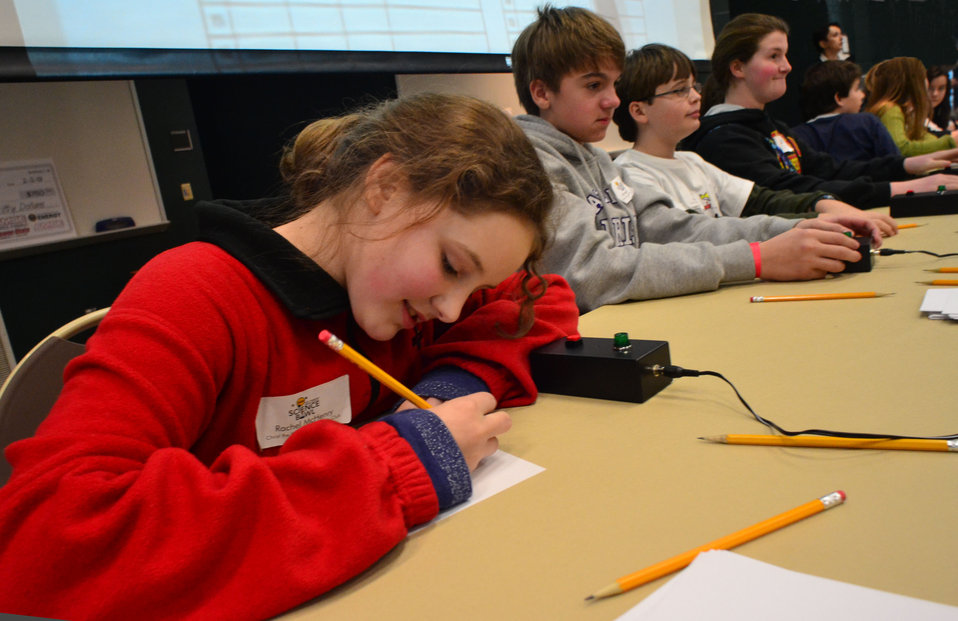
Christ the King School Second Place DOE Tennessee Middle School Science Bowl Oak Ridge

13-008 DOE photo Lynn Freeny DOE Tennessee Middle School Scence Bowl 2-2-2013 Oak Ridge Tennessee